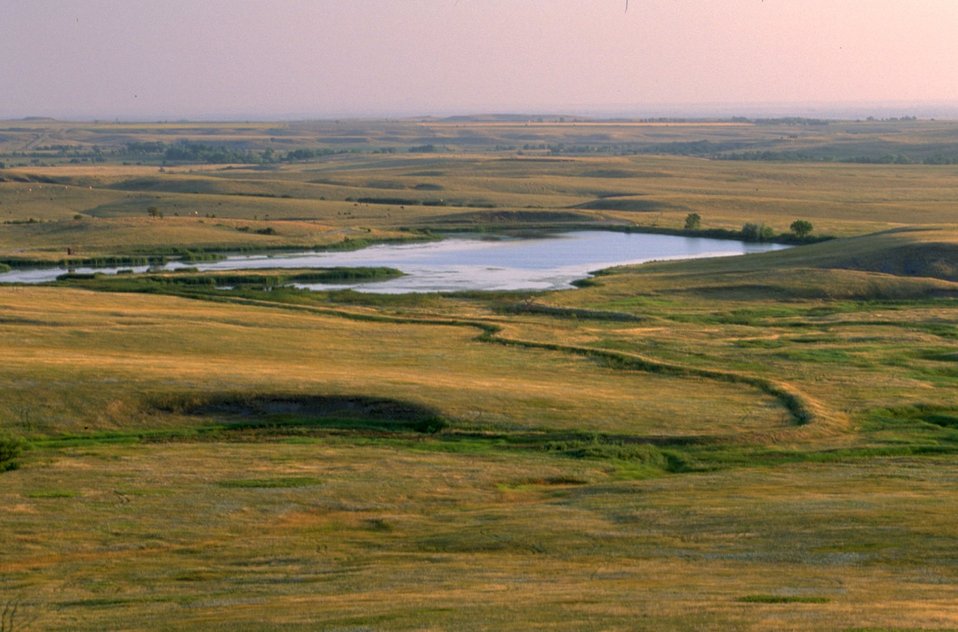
Fort Meade Reservoir at the north end of Fort Meade